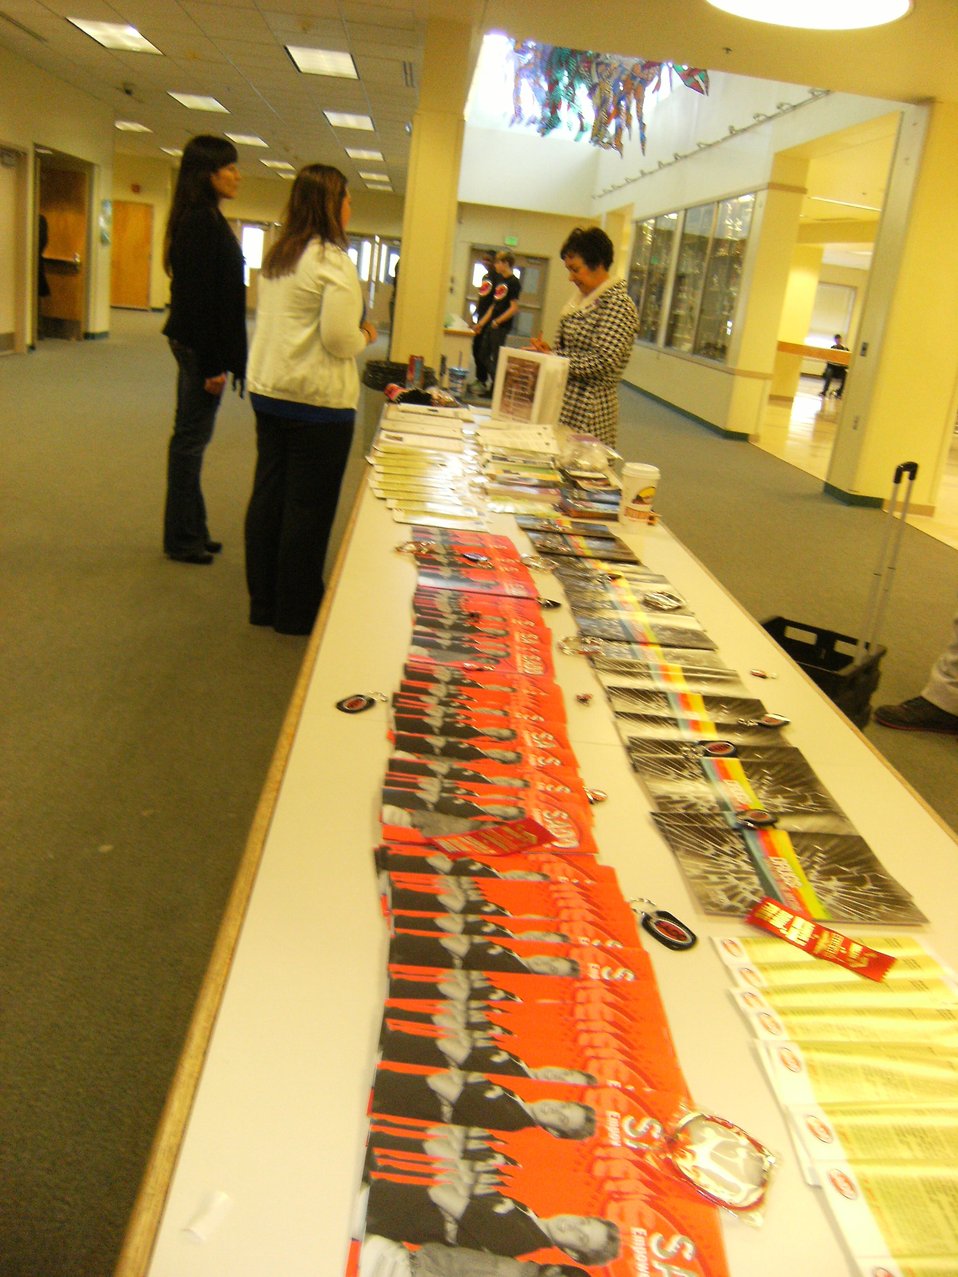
NDFW Materials in Alaska

Students Against Destructive Decisions (SADD)
presented an assembly with guest speaker Amy Bollaert, Coordinator of the Fairbanks Prevention Coalition, as part of SADD's 'Signature Events' program in Fairbanks, Alaska